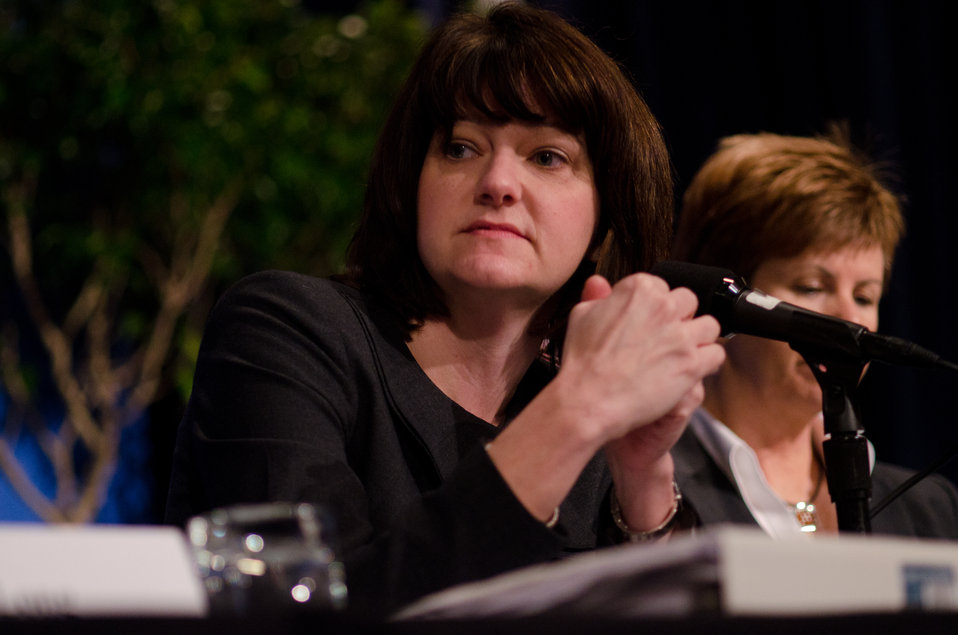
Policy and Program Development Branch, Child Nutrition Division, Food and Nutrition Service Melissa Rothstein took questions on the Healthy, Hunger-Free Kids Act of 2010 (Public Law 111-296) and the U.S. Department of Agriculture's proposed updated nutrition standards for school meal development, during the School Nutrition Association’s closing general session of their 39th annual Legislative Action Conference at the J.W. Marriott Hotel in Washington, D.C., on Wednesday, March 9, 2011.